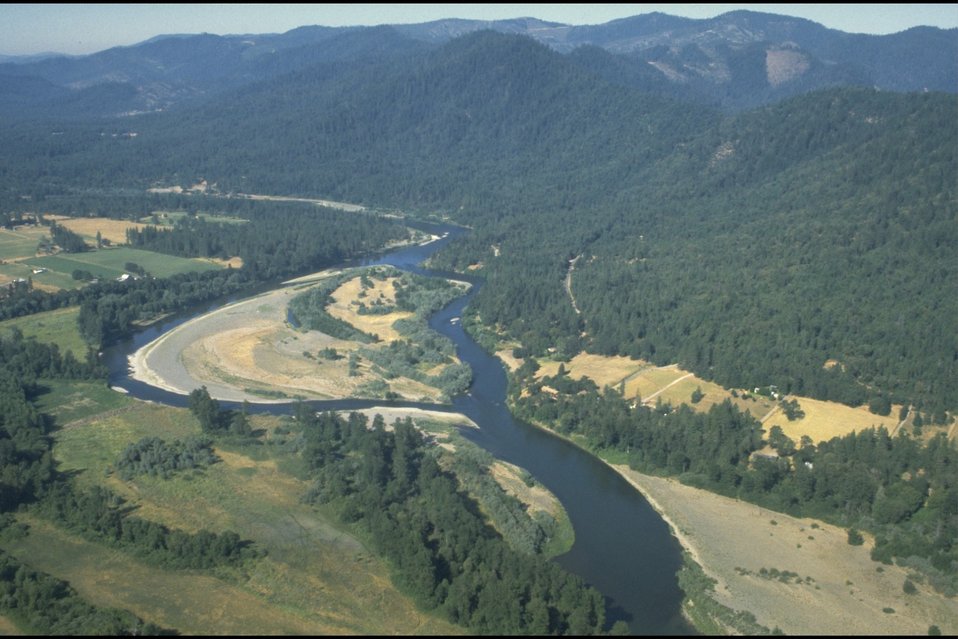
Rogue River - Brush Chutes, Hellgate Recreation Area. Aerial photo.